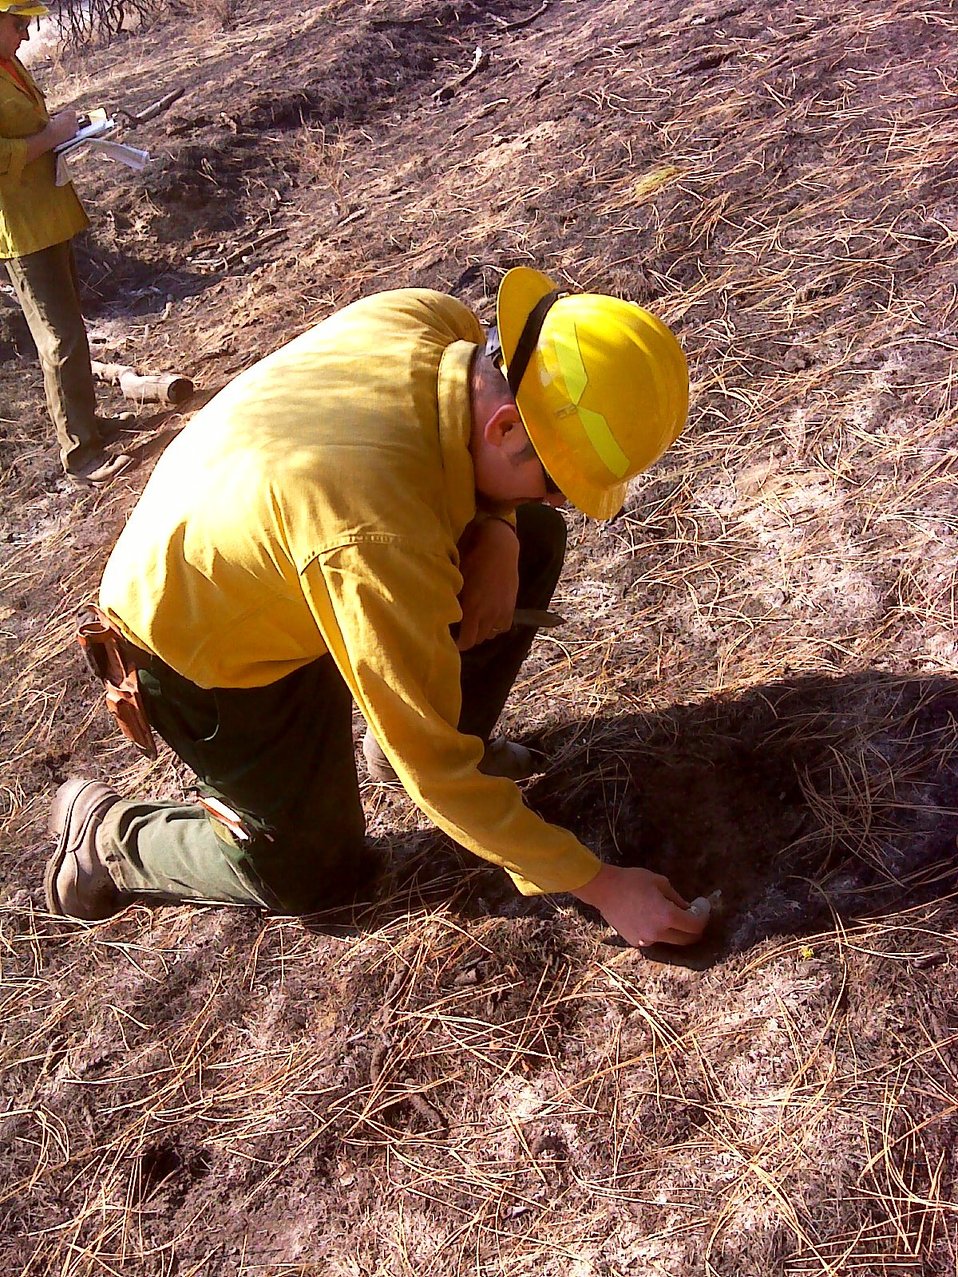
Burned Area Emergency Response (BAER) soils scientist tests the hydrophobicity watershed condition in Wenatchee Complex at the site of the Central Washington Fire in the Wenatchee National Forest in Washington. BAER is a rapid assessment of burned watersheds by a BAER team to identify imminent post-wildfire threats to human life and safety property and critical natural or cultural resources on National Forest System lands and take immediate actions to implement emergency stabilization measures before the first major storms. Fires result in loss of vegetation exposure of soil to erosion and increased water runoff that may lead to flooding increased sediment debris flows and damage to critical natural and cultural resources. BAER team members implement seeding and mulching installation to prevent erosion, erect temporary water run-off control structures that will protect recovering areas, and installation of warning signs, replace safety related facilities, remove safety hazards, prevent permanent loss of habitat for threatened and endangered species, and prevent the spread of noxious weeds and protect critical cultural resources.